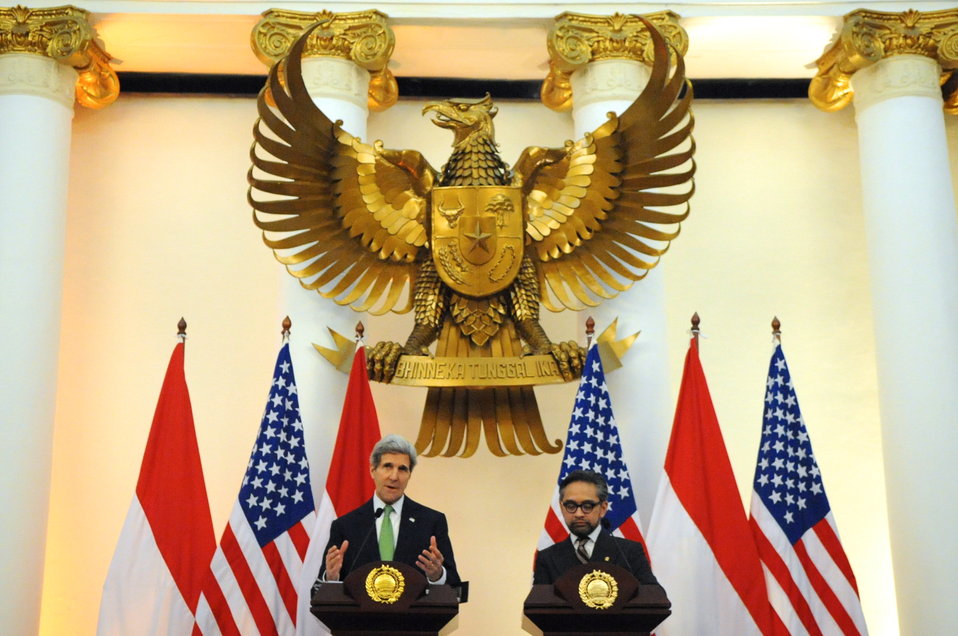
Secretary Kerry and Indonesian Foreign Minister Natalegawa Address Reporters in Jakarta

U.S. Secretary of State John Kerry and Indonesia Foreign Minister Marty Natalegawa hold a news conference after a bilateral meeting in Jakarta, Indonesia on February 17, 2014.